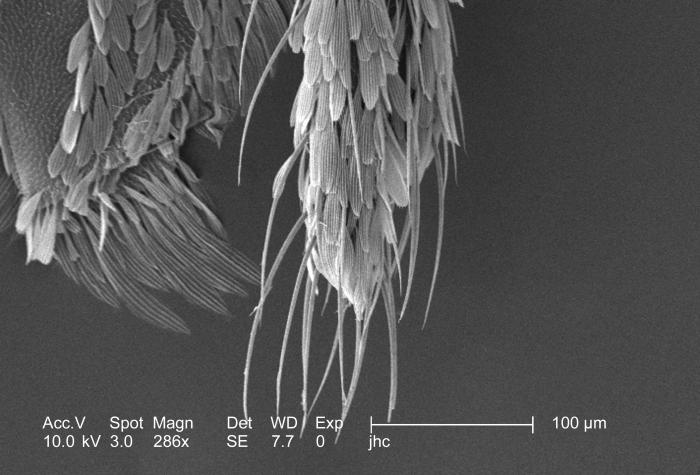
At a magnification of 286x, this scanning electron micrograph (SEM) revealed some of the morphologic features displayed on the exoskeletal surface of an Anopheles dirus mosquito. Highlighted in this view was the distal tip of one of the mosquito's two palps, which are sensory structures that emanate from either side of the proboscis.